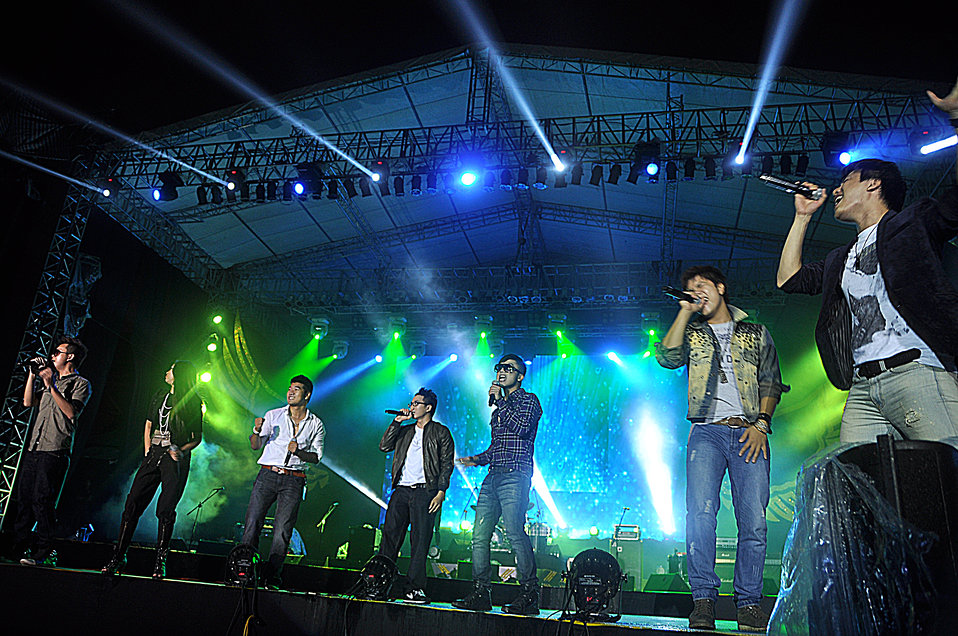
USAID supports MTV EXIT concert against human trafficking and exploitation